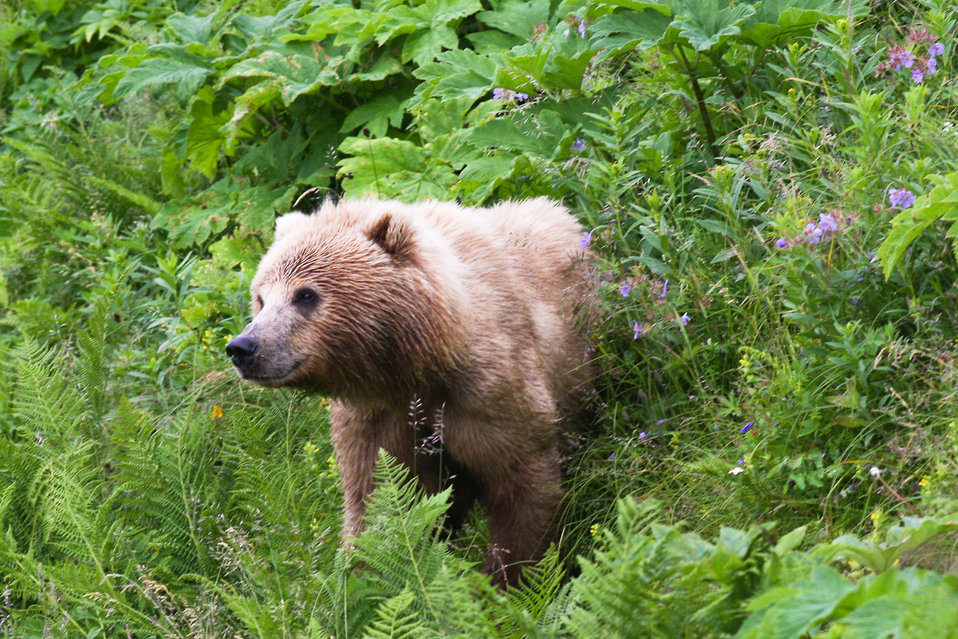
Hillside vantage

Kodiak brown bear.
Lisa Hupp/USFWS